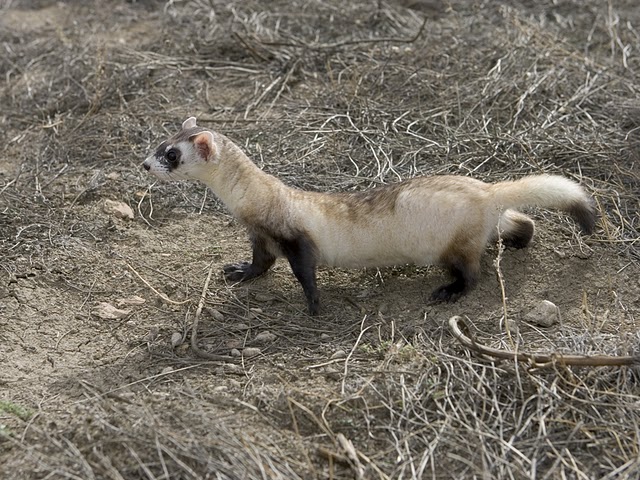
Black-footed Ferret Full Body